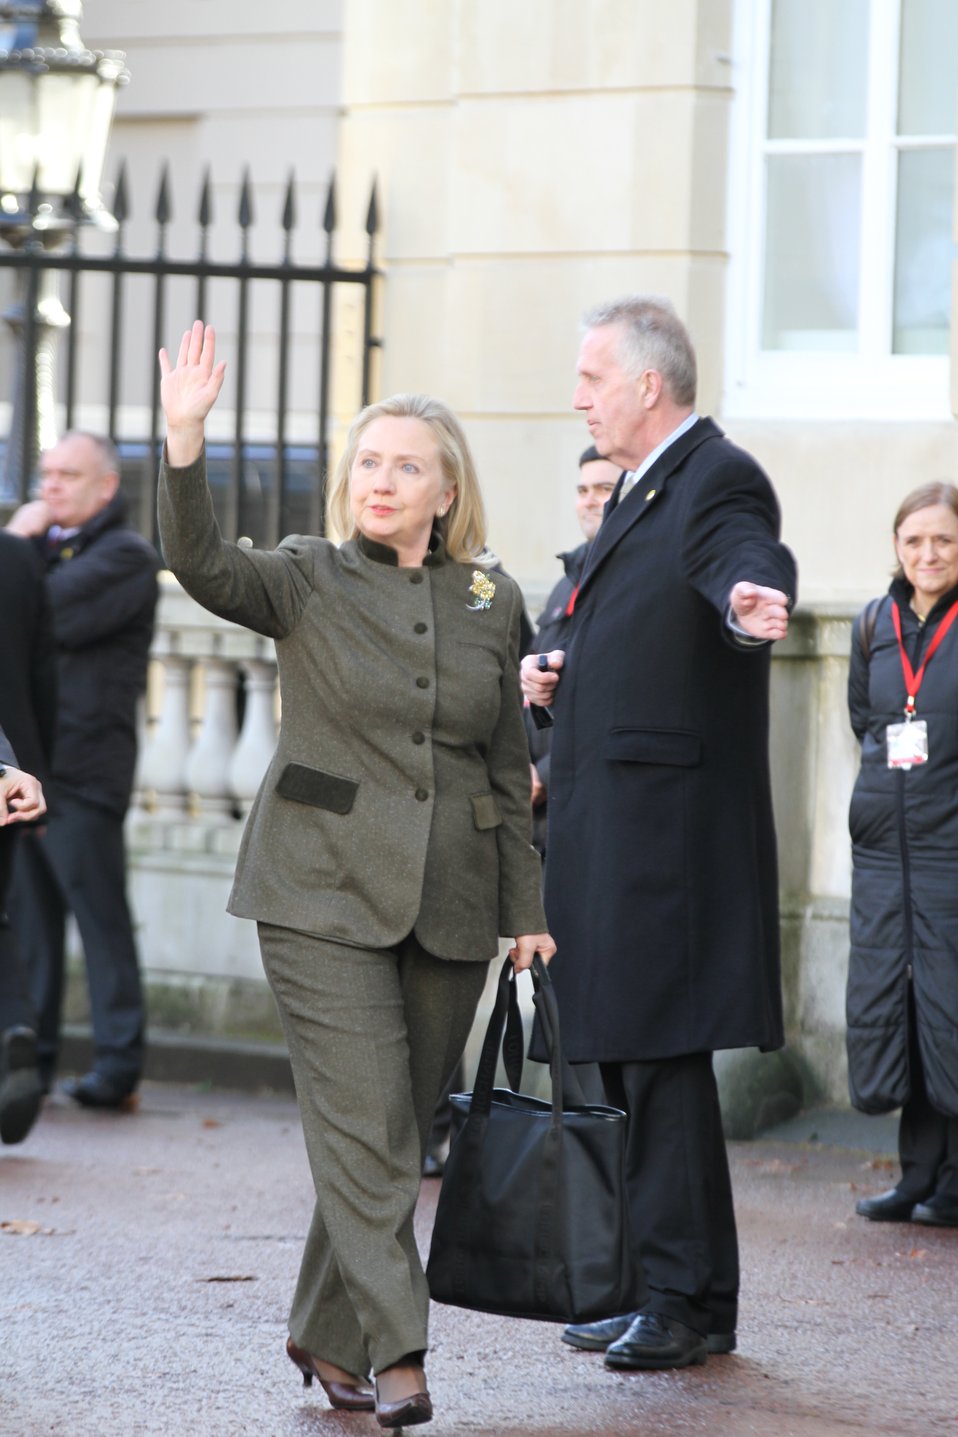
Secretary Clinton Waves

U.S. Secretary of State Hillary Rodham Clinton waves as she enters the Lancaster House to participate in the London Conference on Somalia, hosted by UK Prime Minister David Cameron, on February 23, 2012.